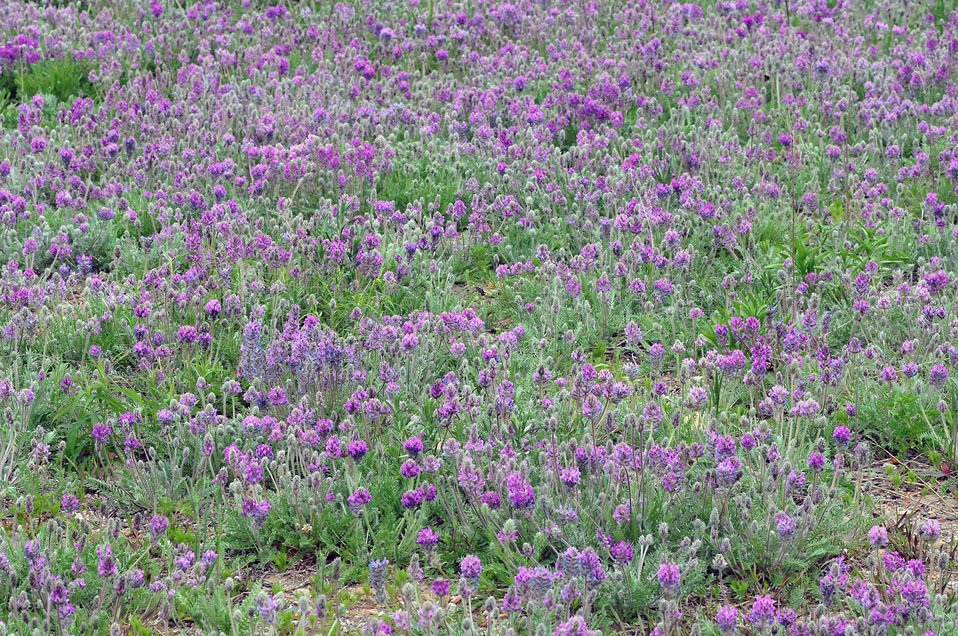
Expanse of Fassett's Locoweed

Receding lake levels may expose seed banks of Fassett's locoweed. Fassett's locoweed is a federally threatened plant. Photo by USFWS; Joel Trick